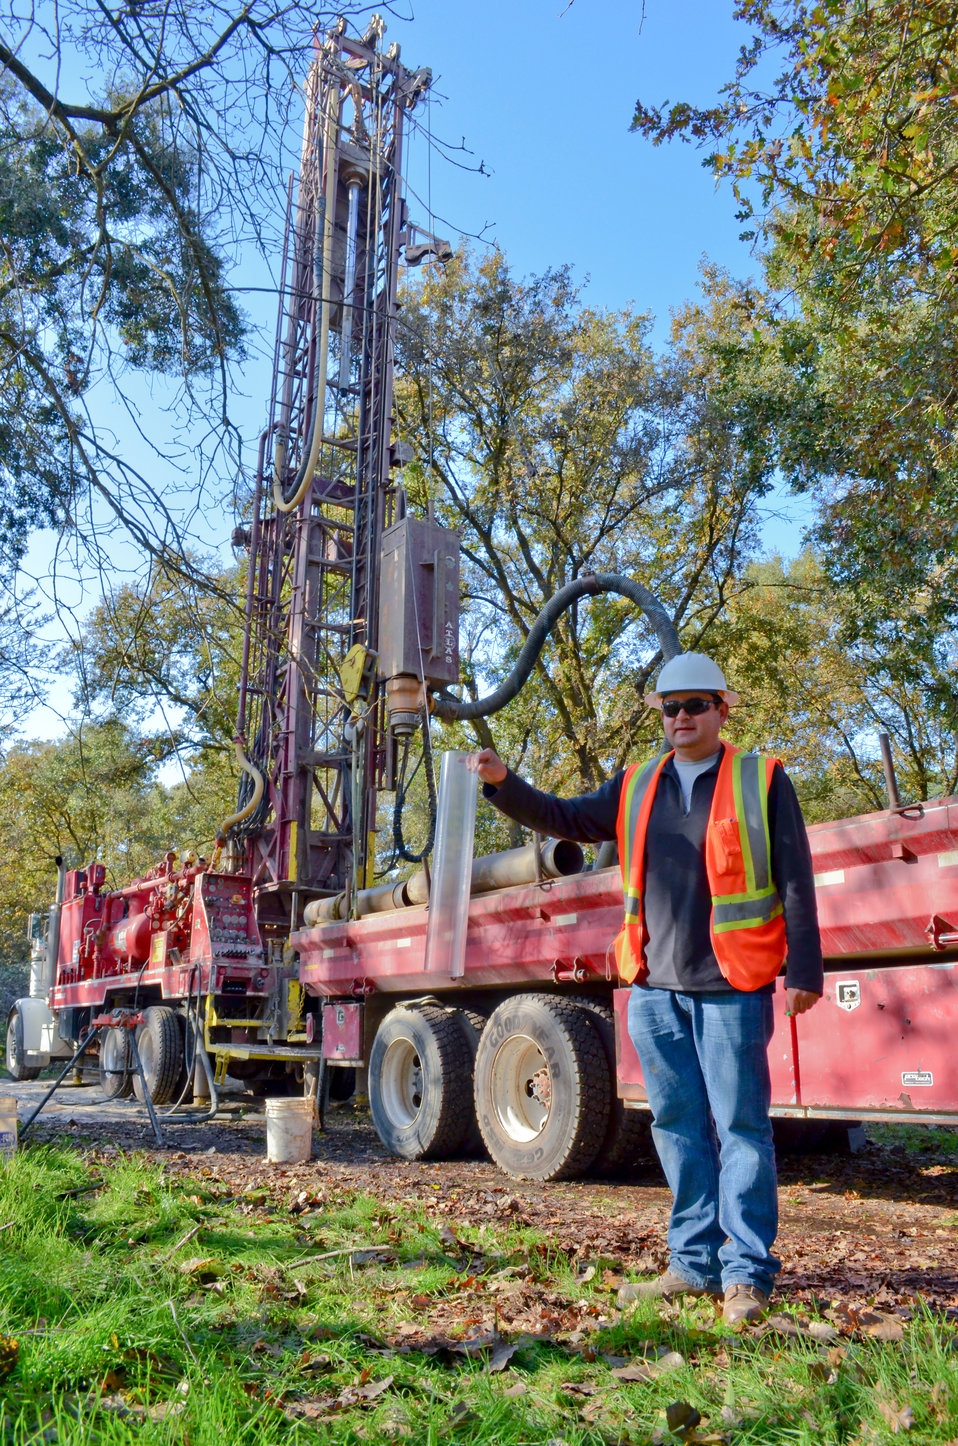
Corps contractor digs deep for answers

URS Corporation project engineer Pablo Naranjo holds up an empty soil sample tube along the American River’s north bank in Sacramento, Calif., Nov. 18, 2011. Engineers are assessing erosion and seepage risk along the riverbank as part of the Corps’ American River Common Features General Reevaluation Report, determining the federal plan to provide additional flood risk reduction to Natomas as well as the rest of the City and County of Sacramento. Digging between 50-90 feet deep, engineers are using the 24-inch-tall, 4-inch-wide tubes to capture sub-surface samples before sealing them with wax and sending them to a lab for analysis. The sampling areas are left in better condition than before: They are filled with special material that prevents water seepage.